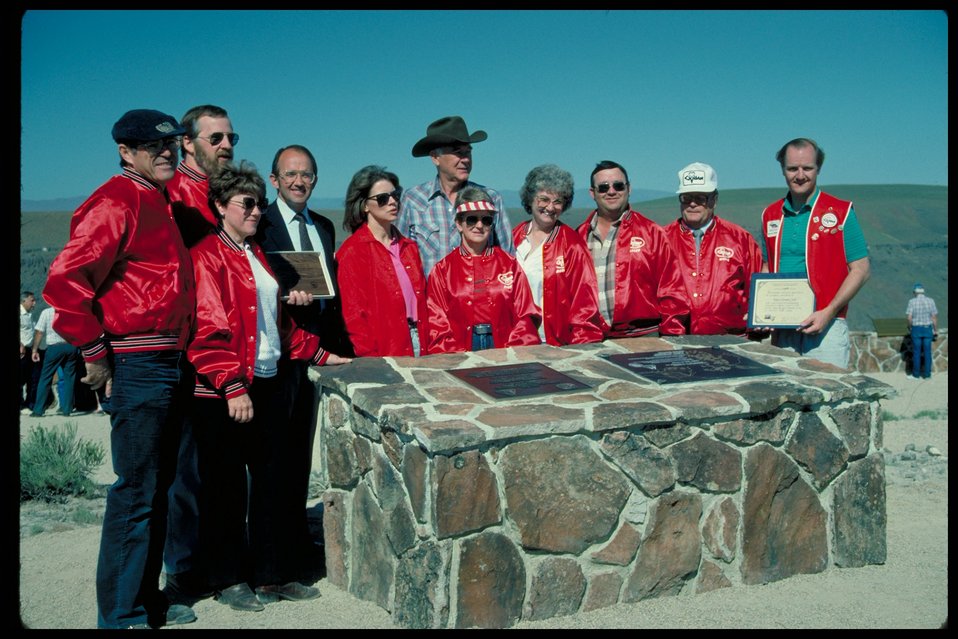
Civilian Volunteers at Dedication Point Birds of Prey National Conservation Area BOP Owyhee Field Office LSRD Lower Snake River District